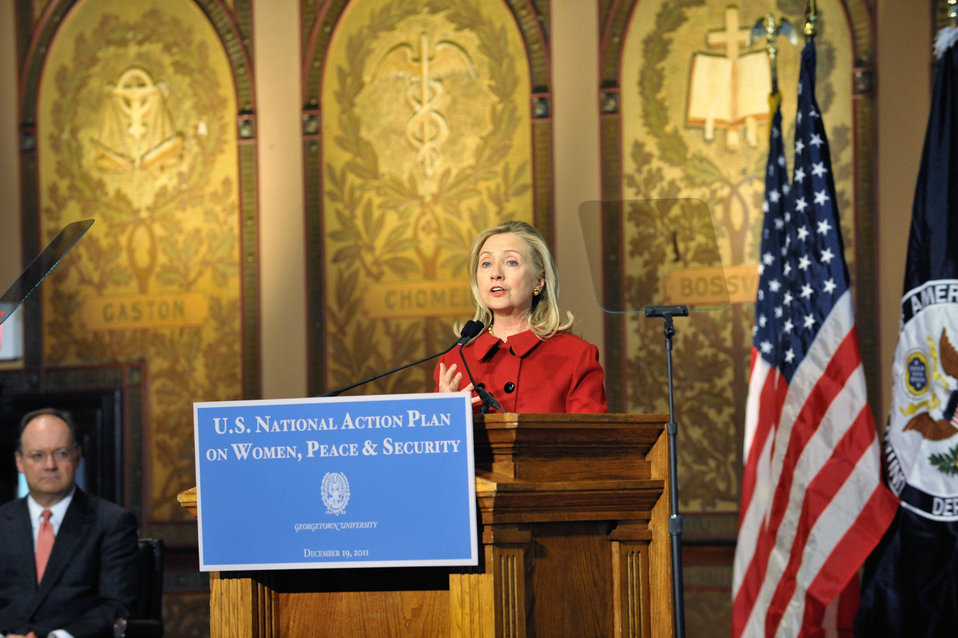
Secretary Clinton Delivers Remarks on Women, Peace, and Security

U.S. Secretary of State Hillary Rodham Clinton discusses new efforts across the U.S. government to support women's participation in peace and security, including plans to better protect women from conflict-related violence and promote women's leadership and perspectives in all aspects of conflict prevention, resolution, relief, and recovery, at Georgetown University on December 19, 2011.